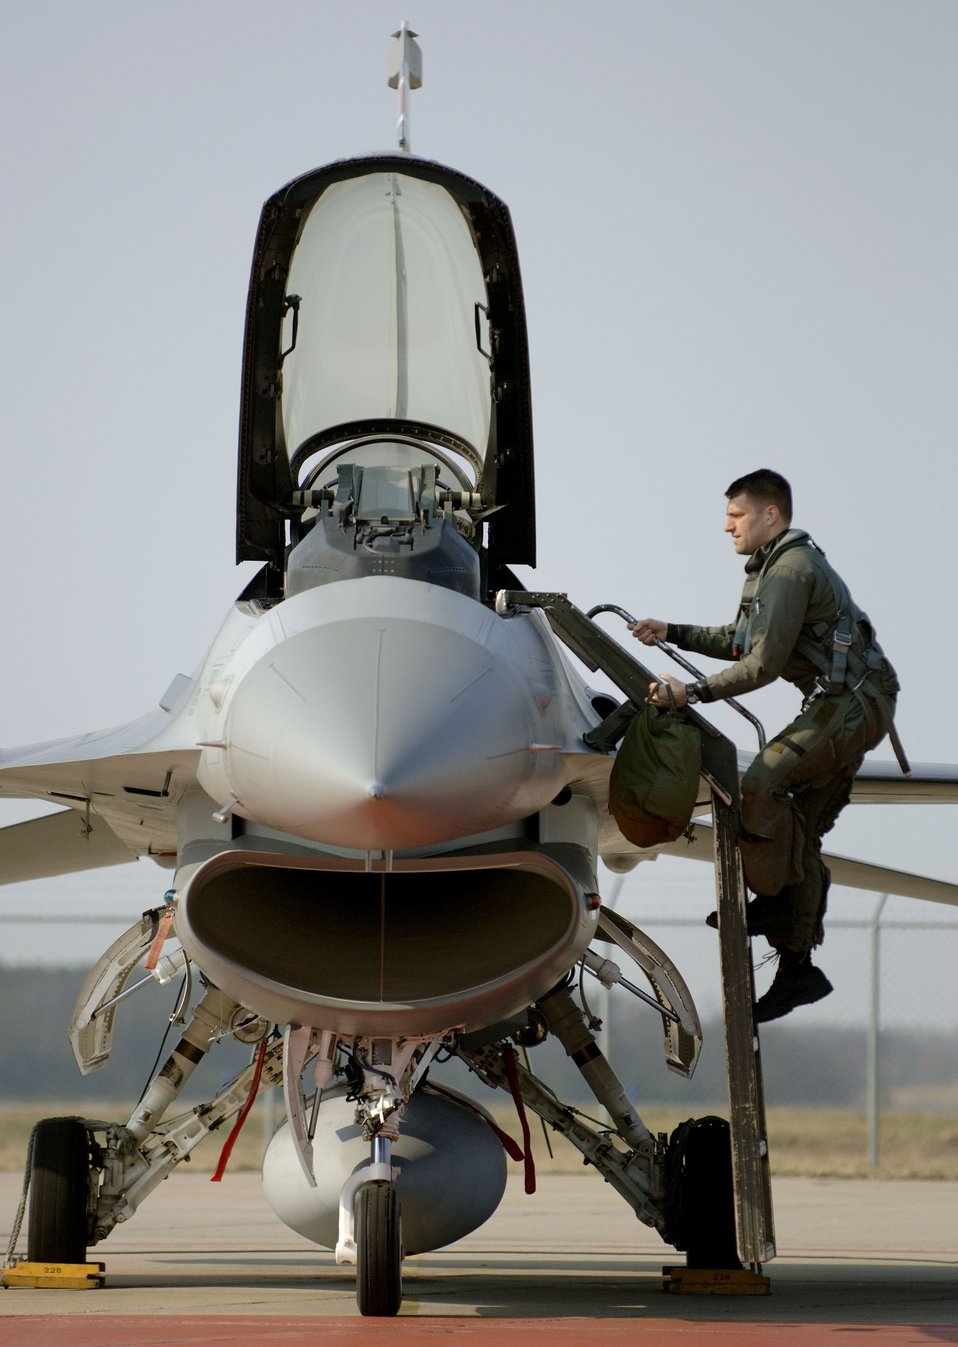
Guard fighter aircraft transition

Maj. Mark Mitchum prepares for a sortie at the Virginia Air National Guard located at Sandstone, Va., on Friday, March 31, 2006. The Virginia ANG is currently transitioning to the new F-22A Raptor at Langley Air Force Base and will replace the F-16 Fighting Falcons as early as October 2007. Major Mitchum is an F-16 pilot with the 149th Fighter Squadron.